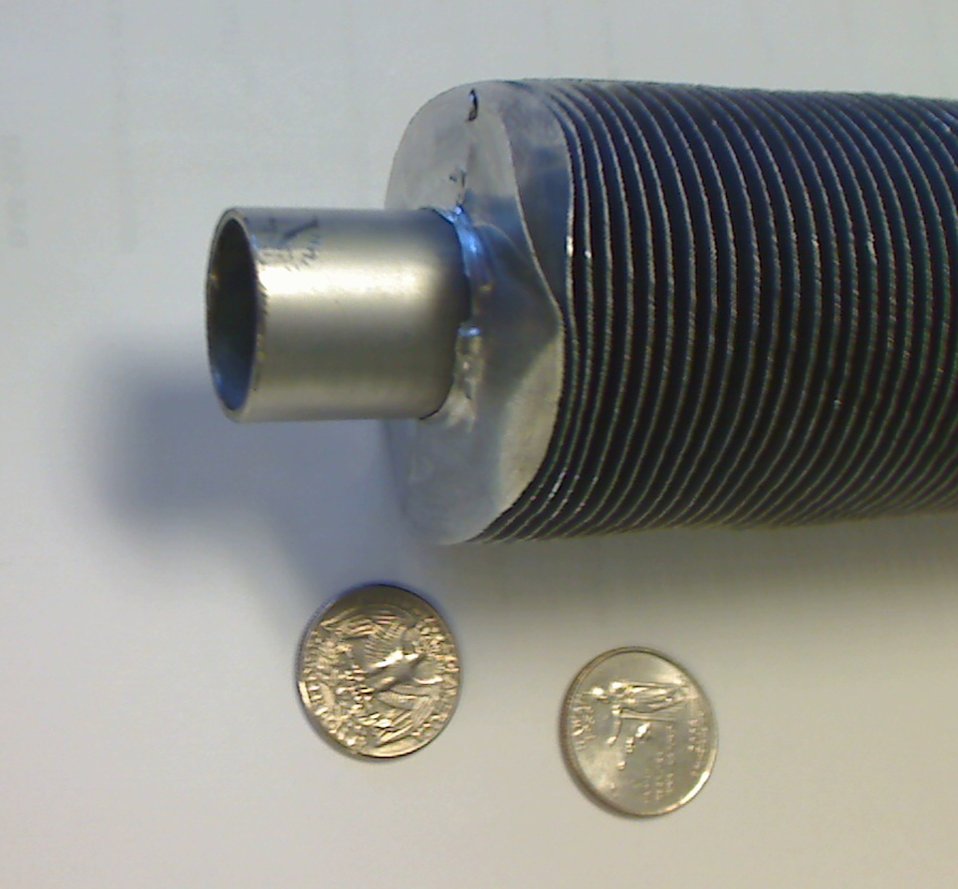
A TYPICAL AIR-COOLED CONDENSER (ACC), SHOWING A TUBE WITH AN OUTER DIAMETER (OD) OF 1 INCH AND A WALL THICKNESS OF 1/16 INCH, IS COVERED BY ALUMINUM FINS OF 1/64-INCH THICKNESS AT A SPACING OF 10 PER INCH, AND HAS A 2.25-INCH OD.